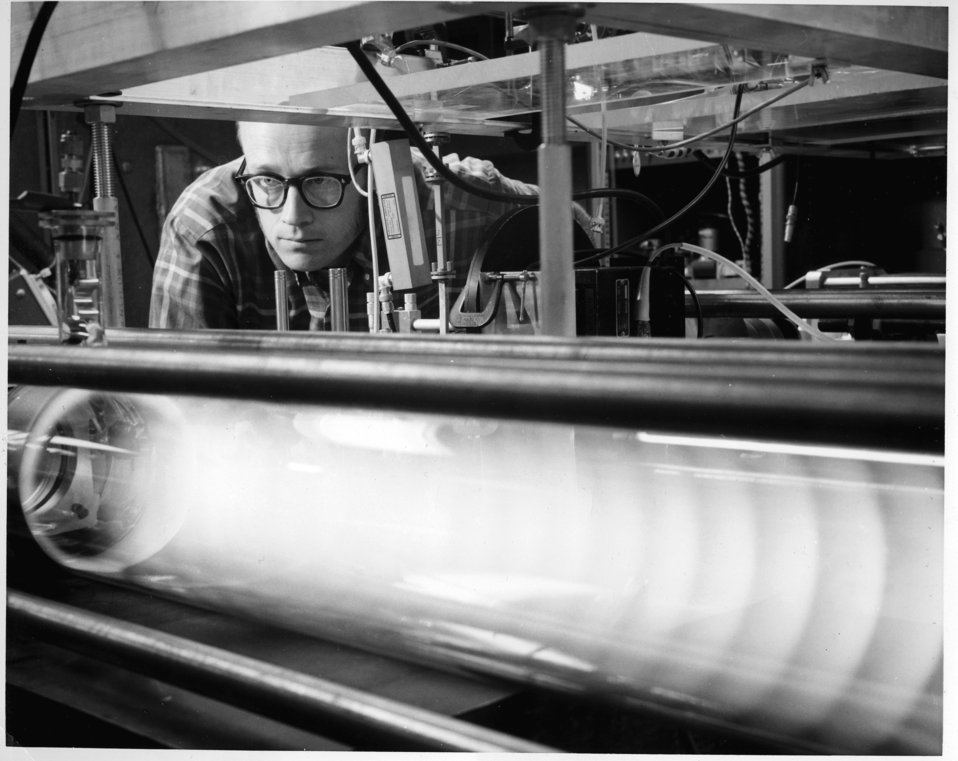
Ken Evenson

NIST physicist Ken Evenson